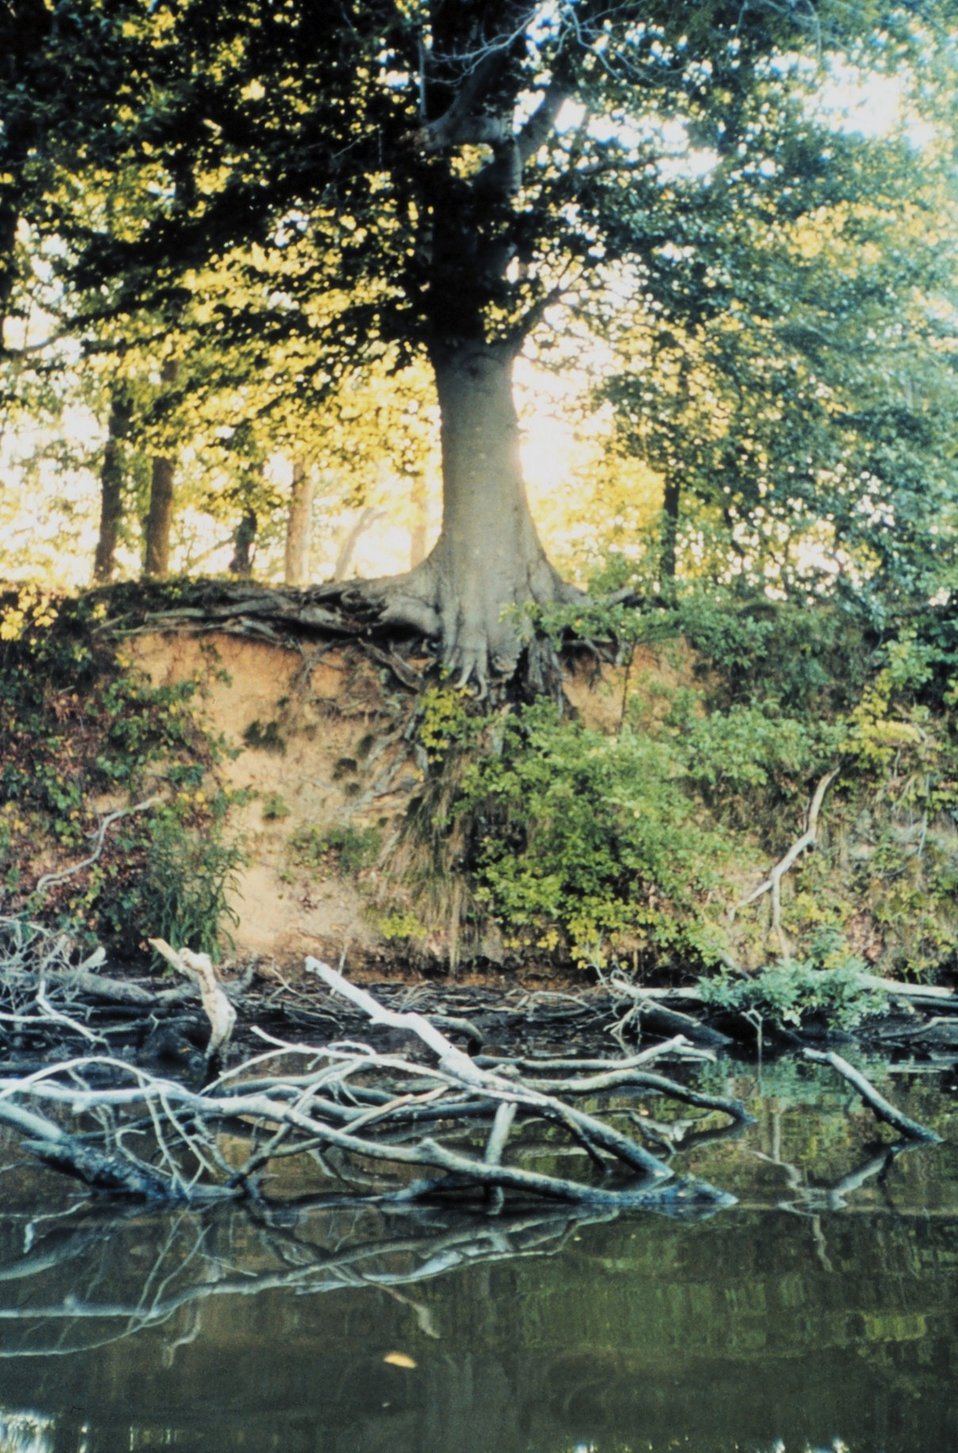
A large tree has a tenacious, if tenuous, hold on an eroding bank along Solo Creek, Wye Island.